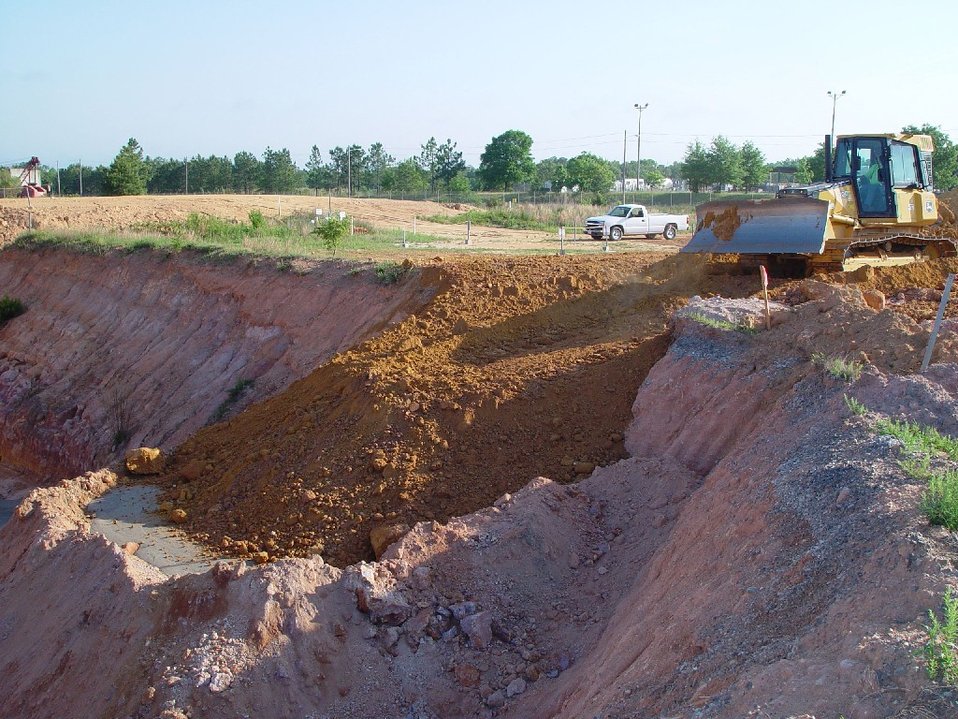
HWCTR PV Disposal, 4-25-11

Recovery Act workers removed the Heavy Water Components Test Reactor vessel and permanently disposed it onsite.